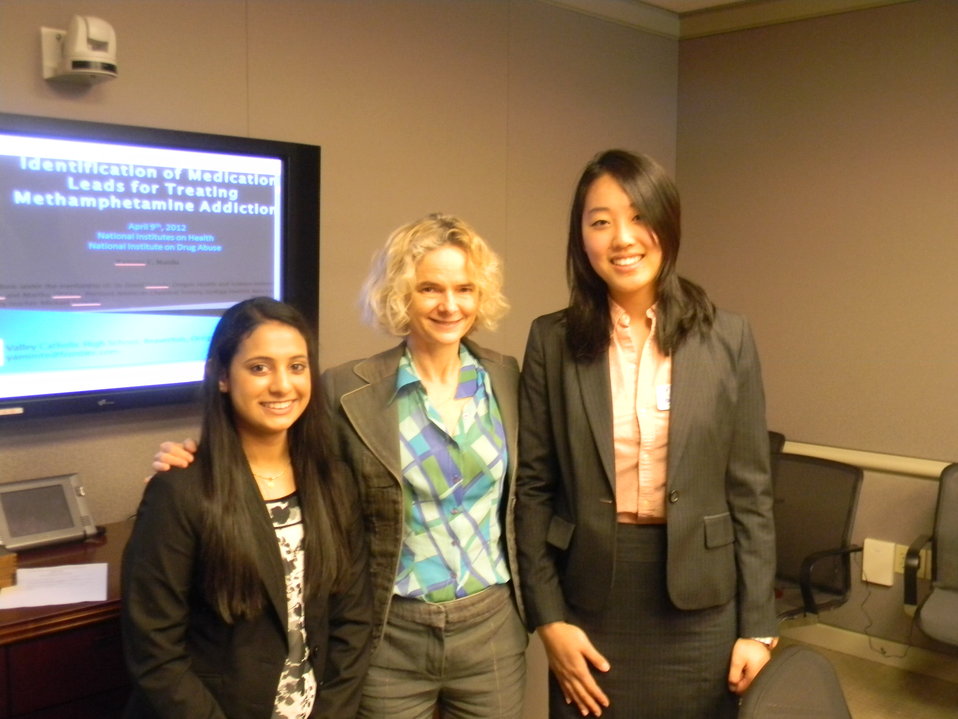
Yamini Naidu and Sarah Pak with NIDA Director Dr. Nora Volkow

2011 Addiction Science Award Winners Yamini Naidu (3rd place) and Sarah Pak (1st place) with NIDA Director Dr. Nora Volkow